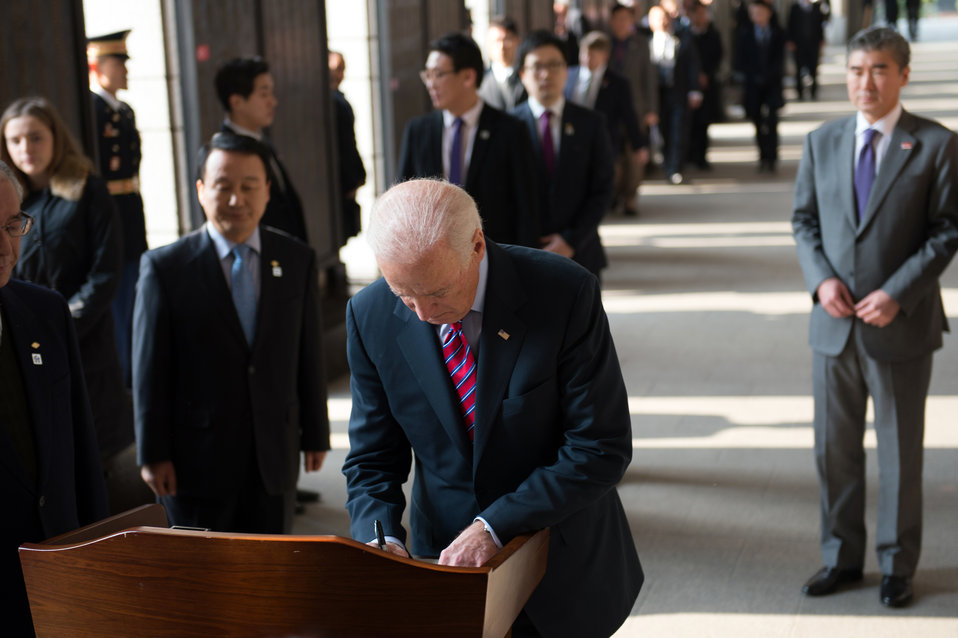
Vice President Biden Honors Military Members

Vice President Joseph Biden lays a wreath to honor military members who died in service to their country at the War Memorial of Korea in Seoul, South Korea, on December 7, 2013.